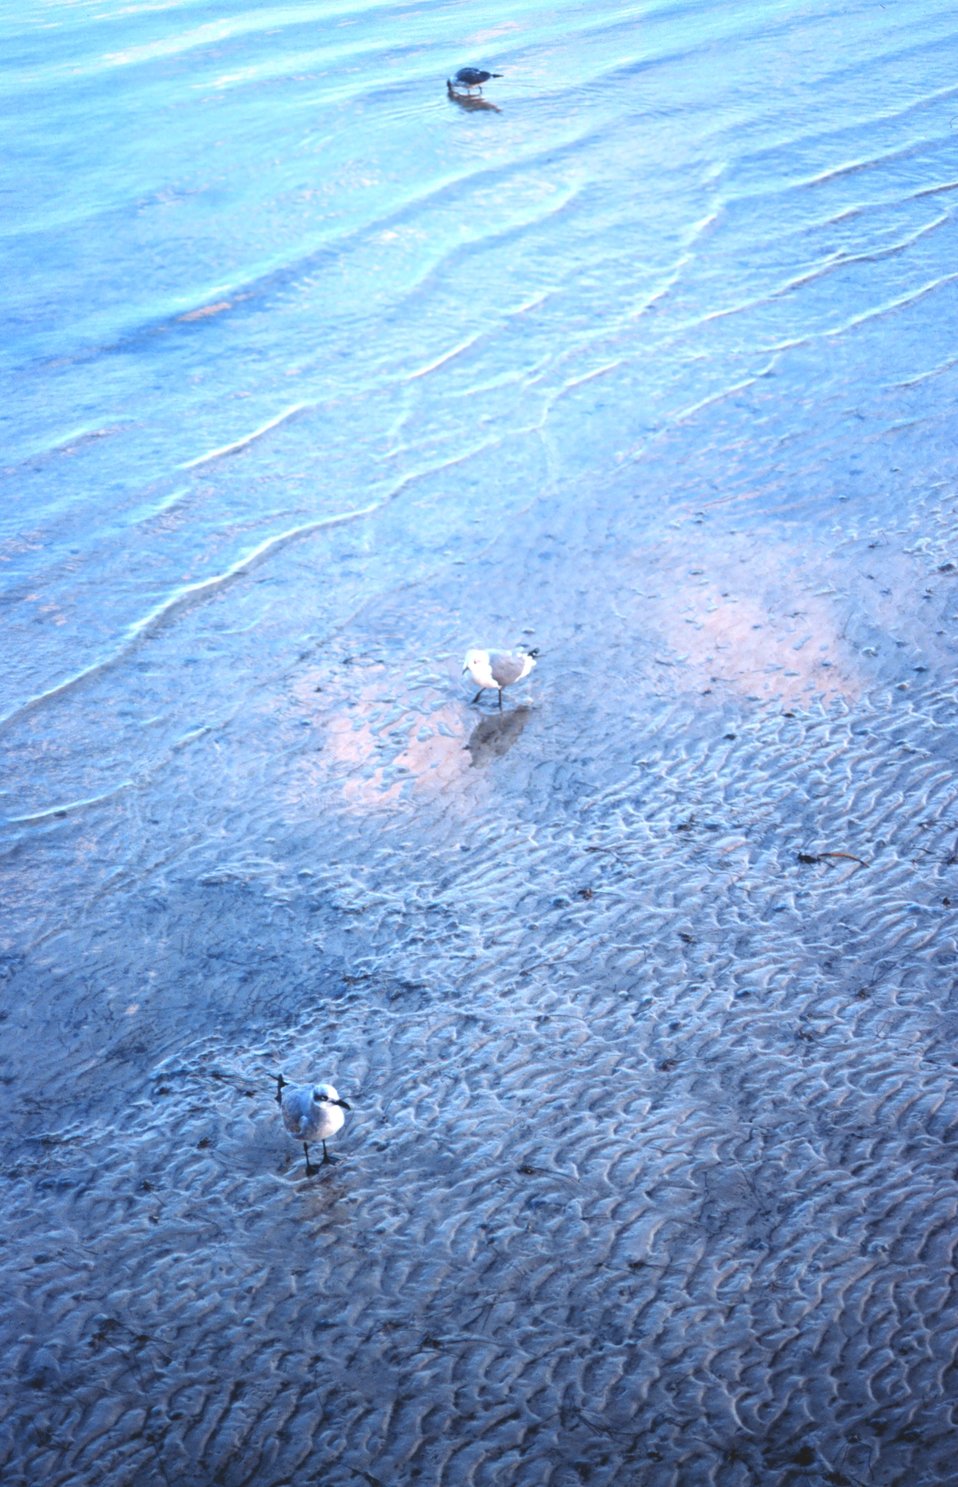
Gulls on a sandy bottom area at low tide. Ripples indicate fairly high energy tidal currents.